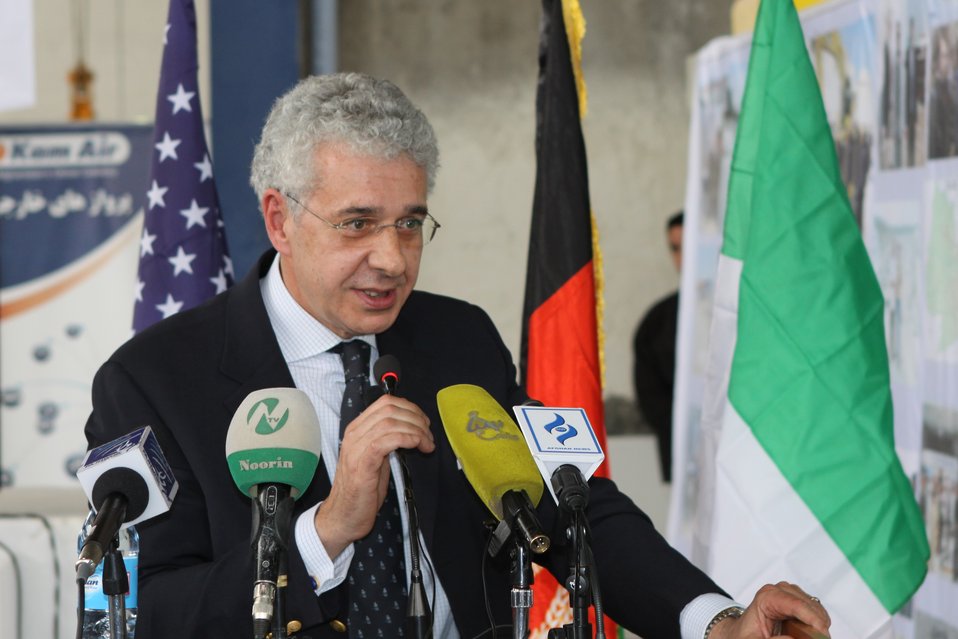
100525 Hirat Marble Conference 245